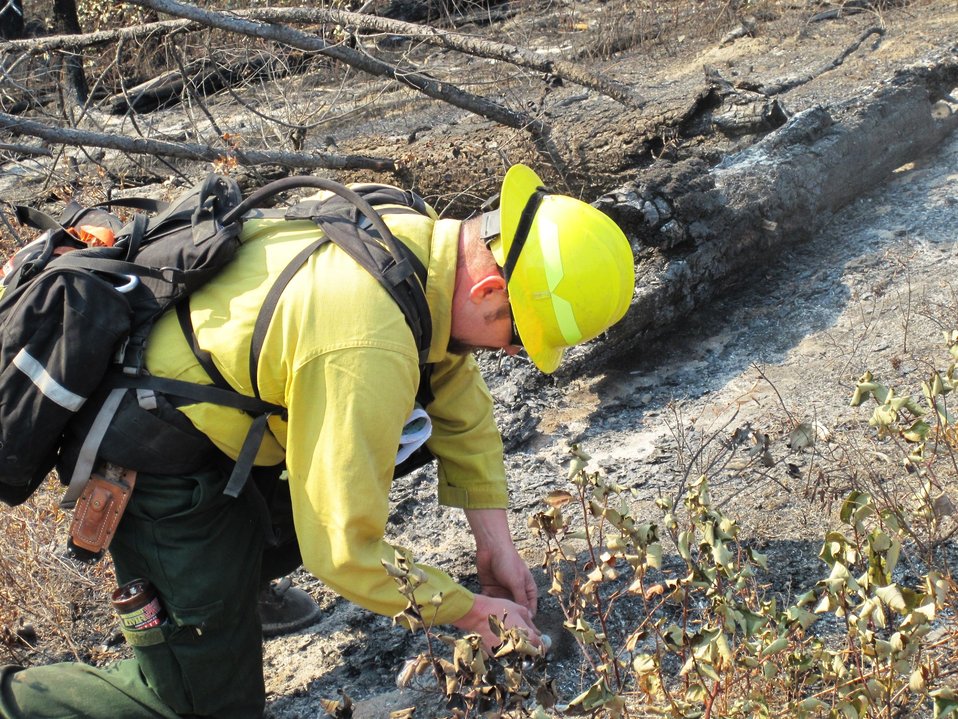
Burned Area Emergency Response (BAER) soils scientist tests soil burn severity at the site of the Central Washington Fire in the Wenatchee National Forest in Washington. BAER is a rapid assessment of burned watersheds by a BAER team to identify imminent post-wildfire threats to human life and safety property and critical natural or cultural resources on National Forest System lands and take immediate actions to implement emergency stabilization measures before the first major storms. Fires result in loss of vegetation exposure of soil to erosion and increased water runoff that may lead to flooding increased sediment debris flows and damage to critical natural and cultural resources. BAER team members implement seeding and mulching installation to prevent erosion, erect temporary water run-off control structures that will protect recovering areas, and installation of warning signs, replace safety related facilities, remove safety hazards, prevent permanent loss of habitat for threatened and endangered species, and prevent the spread of noxious weeds and protect critical cultural resources.